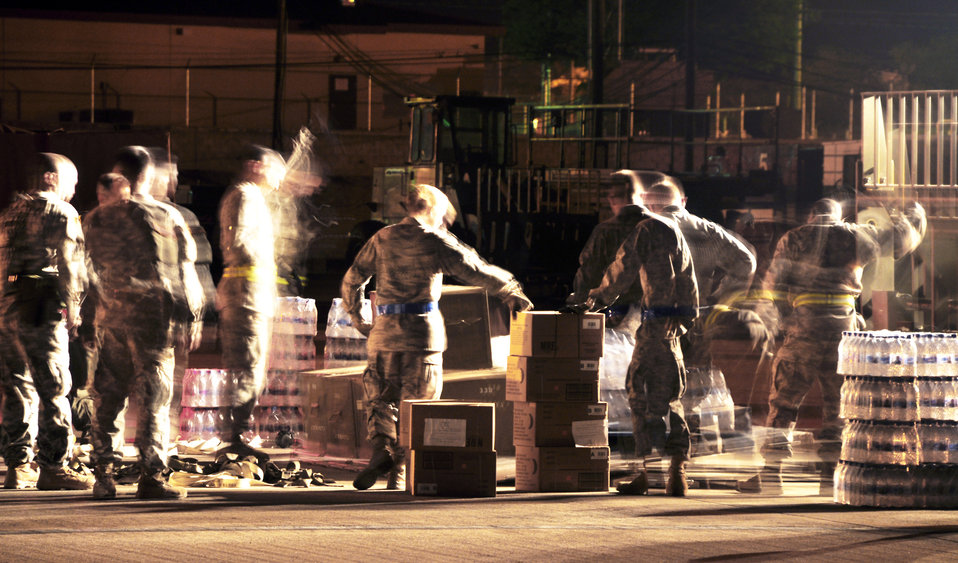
JTF-Bravo deploys medical personnel to support Haiti disaster relief

Members Joint Task Force-Bravo?s 612th Air Base Squadron prepare one of three C-130 Hercules to carry 51,000 pounds of supplies from, Soto Cano Air Base, Honduras, to Haiti Jan. 17, 2010. A team of 23 JTF-B medical element personnel departed on the C-130 to join Joint Task Force-Haiti in support of Operation Unified Response, the joint U.S. military disaster relief mission there.